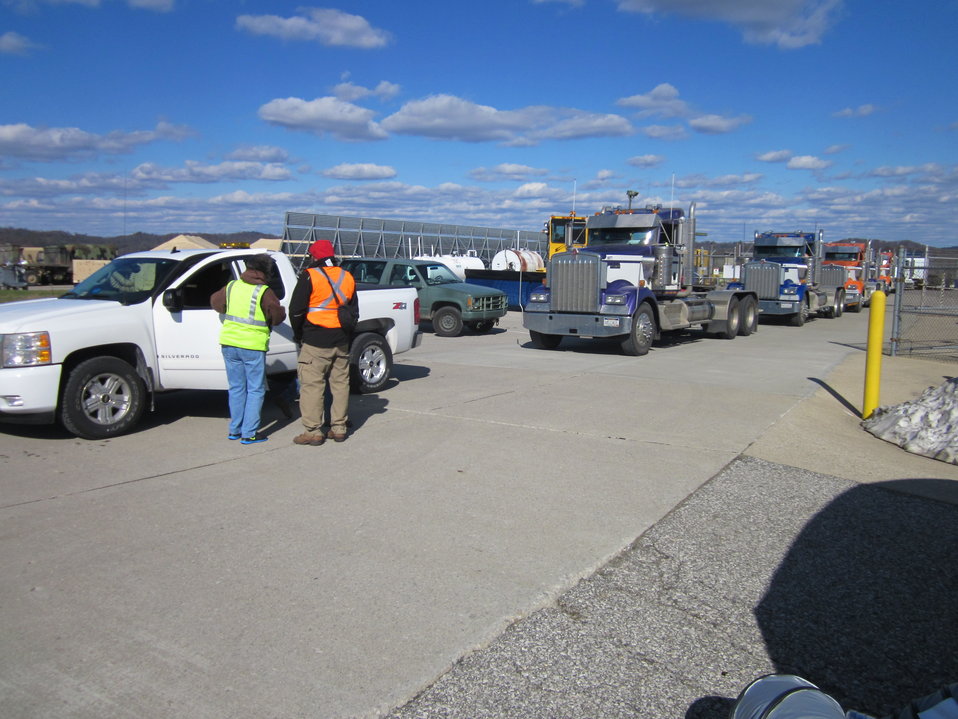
Trucks line up (WV)

Charleston, WV, Nov. 2, 2012: Josh O'Connor, Division Supervisor of the Southern Area Red Type 1 Incident Management Team (right) checks trucks to haul relief supplies with a FEMA worker at a Logistical Staging Area at Yeager Airport. Food, water, generators and other supplies were collected and distributed by the National Guard for storm victims. About 700 pallets of water and 300 pallets of food were distributed. O'Connor is a fire management specialist at the Atlanta, Georgia Regional Office of the U.S. Fish and Wildlife.